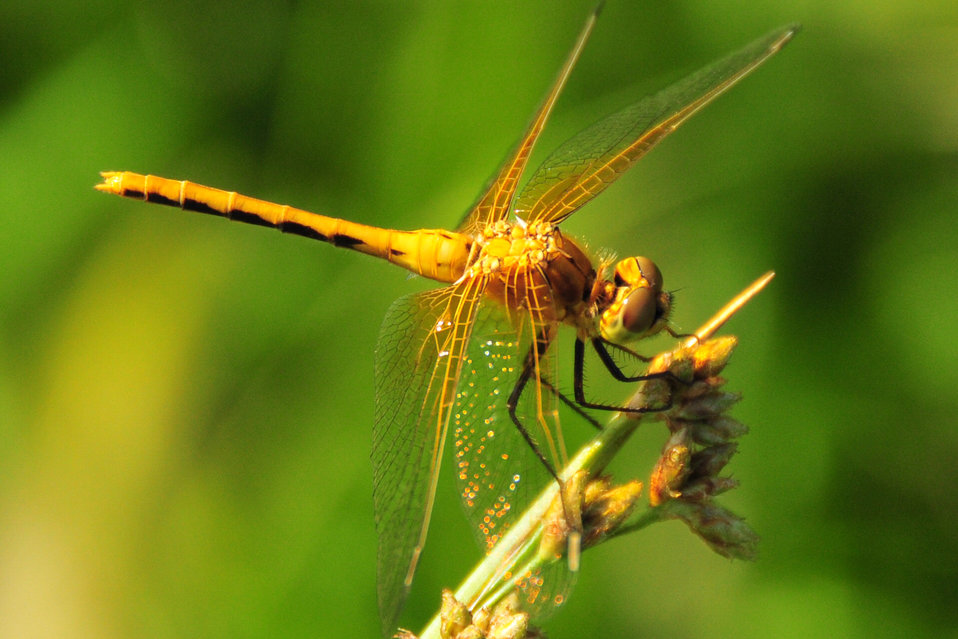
Dragonfly on bulrush 2